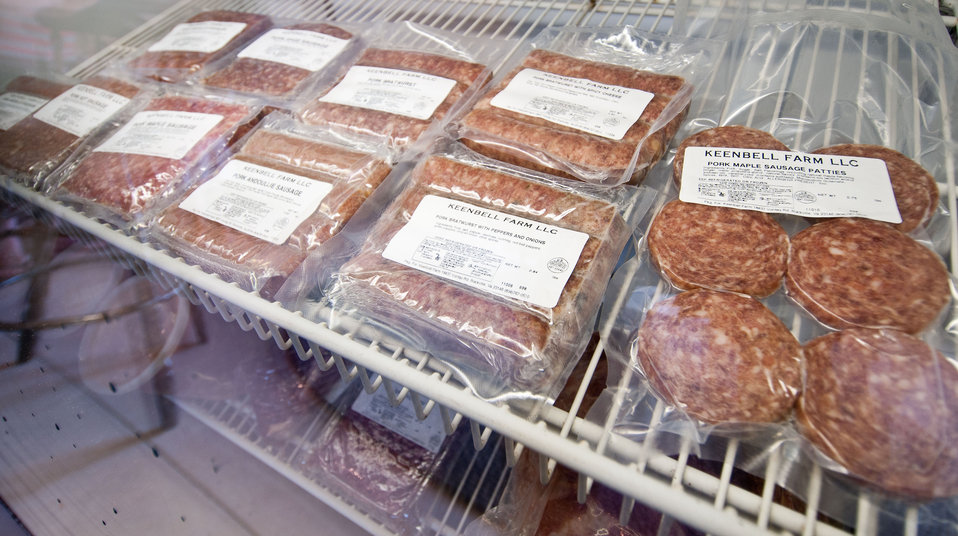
3rd generation farmer CJ Isbell takes pride in in the pork products he produces at Keenbell Farm, Rockville, VA, on Friday, May 6, 2011. The farm was established in 1951. Business has been very good for farmers with pasture raised pigs. Isbell finds it a challenge to expand fast enough to meet demands. Keenbell Farms pork products range from sausage, to bacon, pork chops, roasts, bratwurst, and many more in his onsite sales room and the Fall Line Farms food hub that offer a wide variety of household food staples and specialty items. Members can pick their customized orders from an ever changing inventory of fruits, vegetables, meats, soaps, eggs, cheeses, flowers, honey, pastas, sauces, syrups, baked goods, mushrooms, flour and grains. Suppliers post what they have to sell on Lulus Local Food online listing where customers can make their selection. Every Thursday, suppliers team up to deliver customized orders to, one of several pick-up points, designated by the customer in or around the Richmond, VA area.